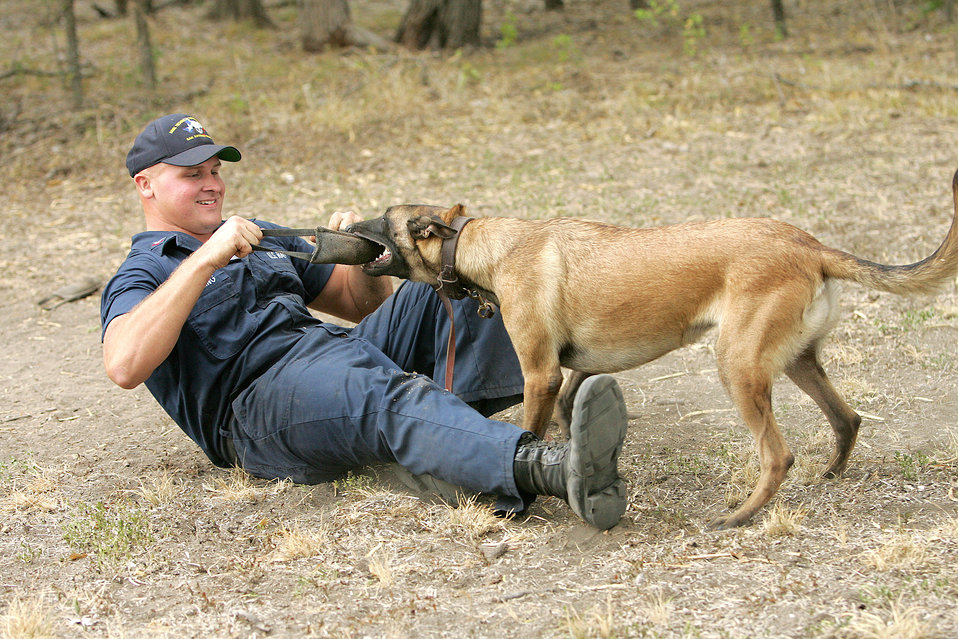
Total Force MWD training

To build up a rapport with his military working dog Vvalerie, Master At Arms 2nd Class David Nerling plays tug-a-war after an obedience training session at Lackland Air Force Base, Texas, Aug. 29. MA2 Nerling is a Navy military working dog trainer with the 341st Training Squadron and works jointly with the Air Force, Army and Marines.